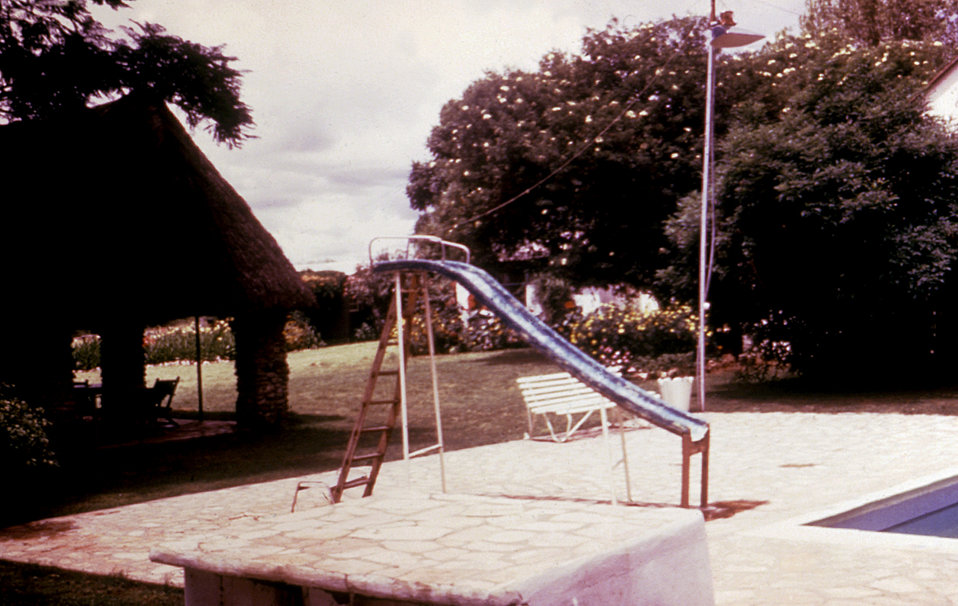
This was the playground - swim area in a campground visited by 2 Marburg patients/travelers heading to Margate, South Africa.